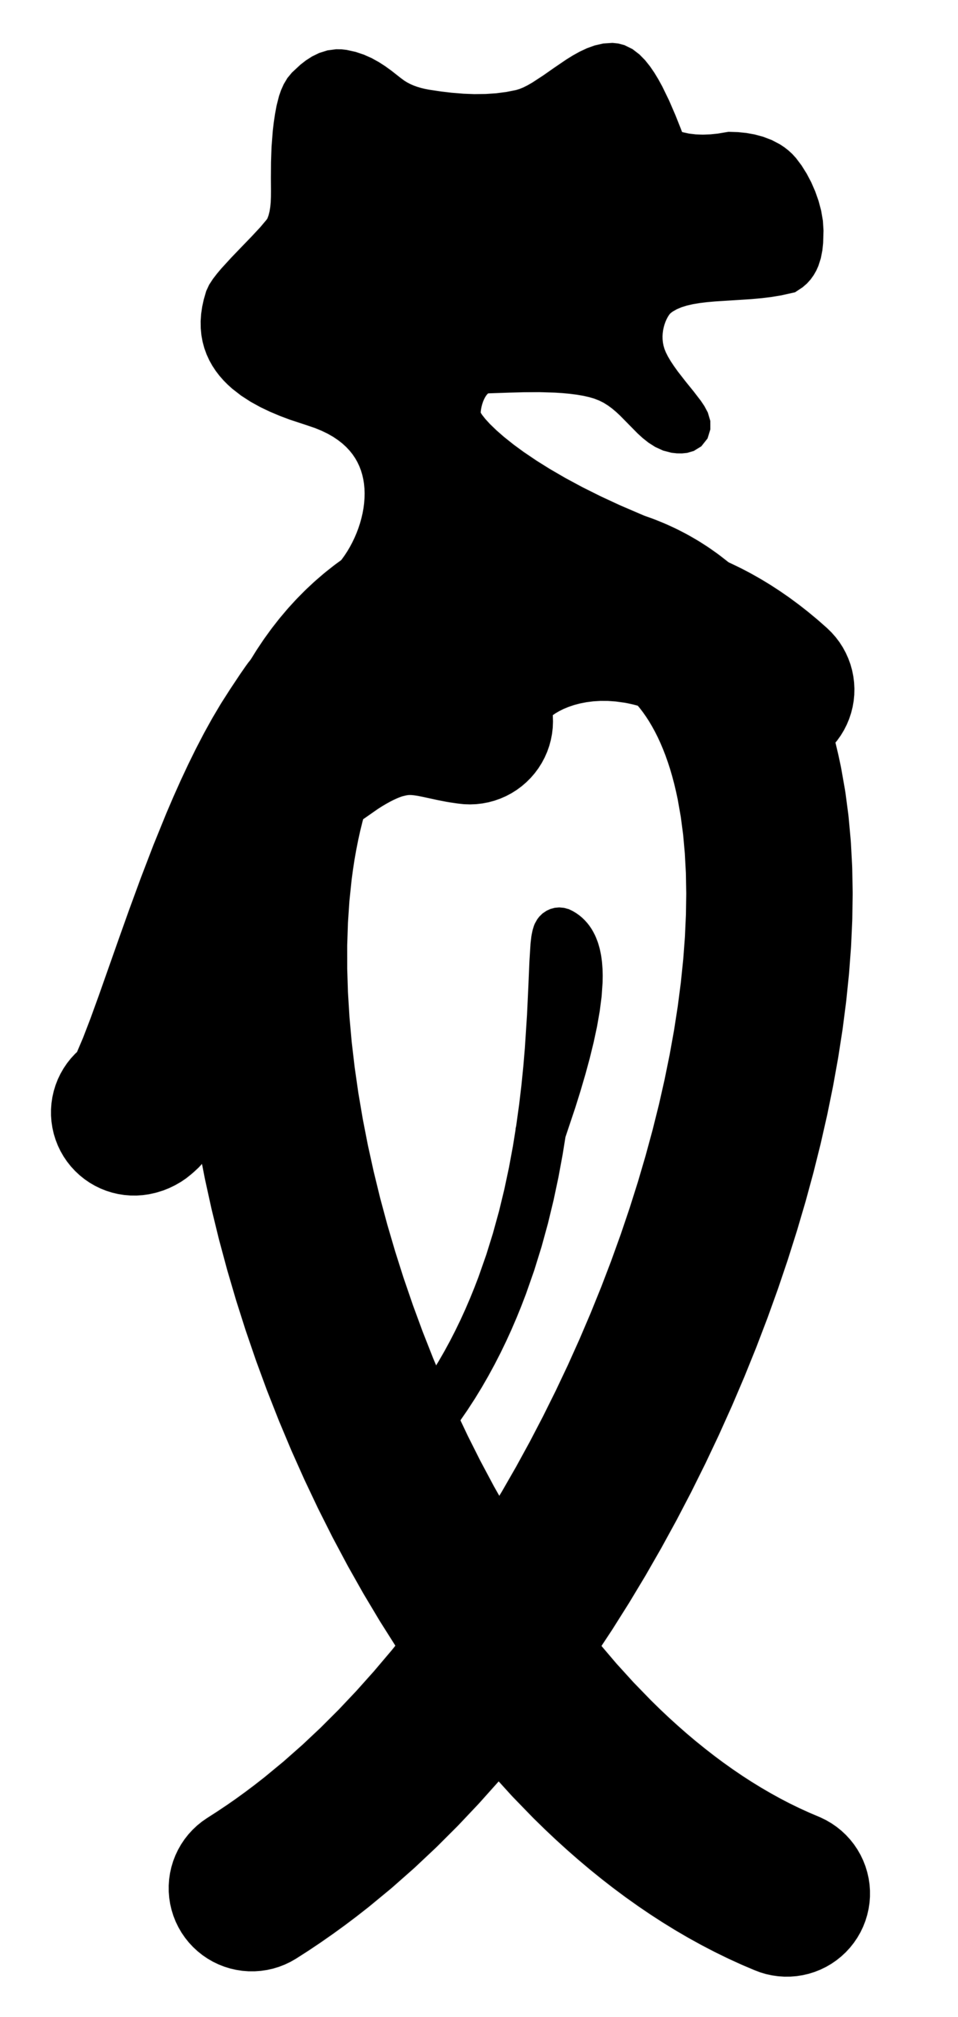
Symbol for the asteroid 11 Parthenope